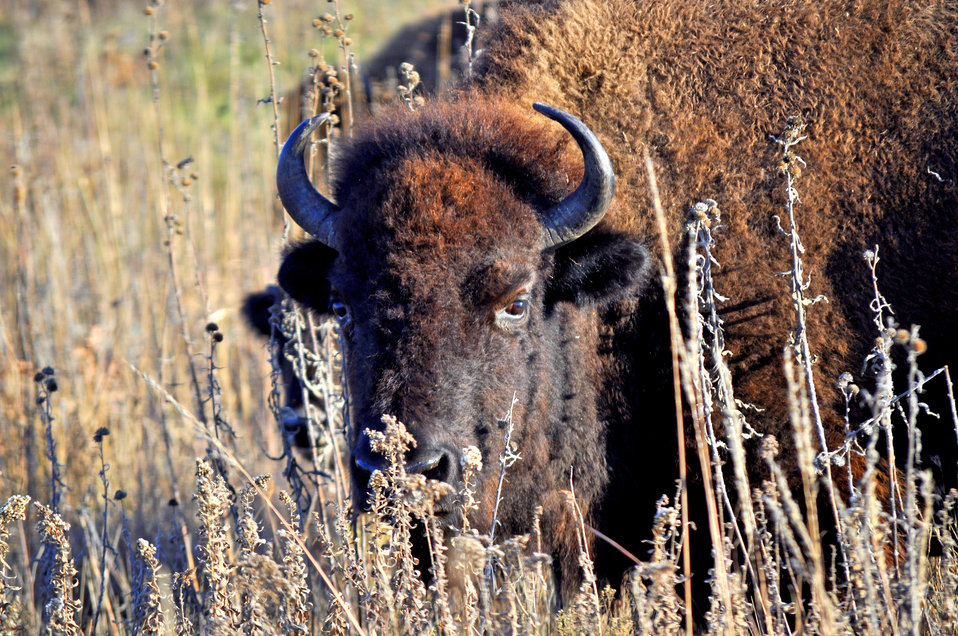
Bison at Dunn Ranch, in a prairie restored by The Nature Conservancy in northwest Missouri.